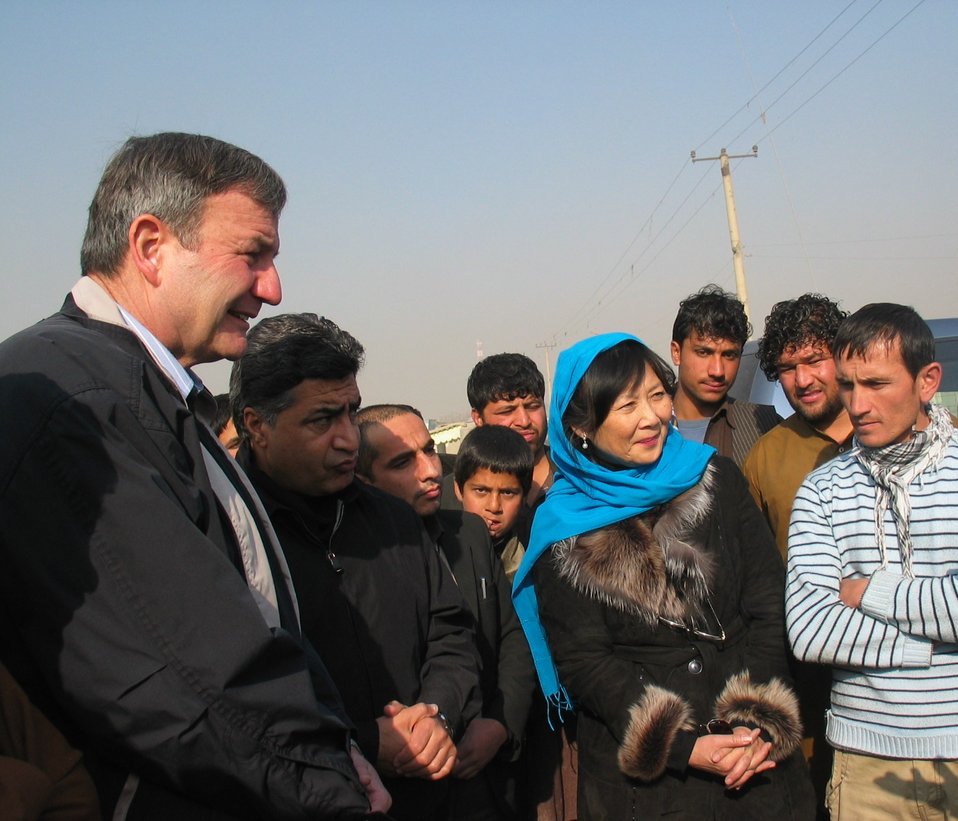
Kabul River Bridge Renovation, December 3, 2010